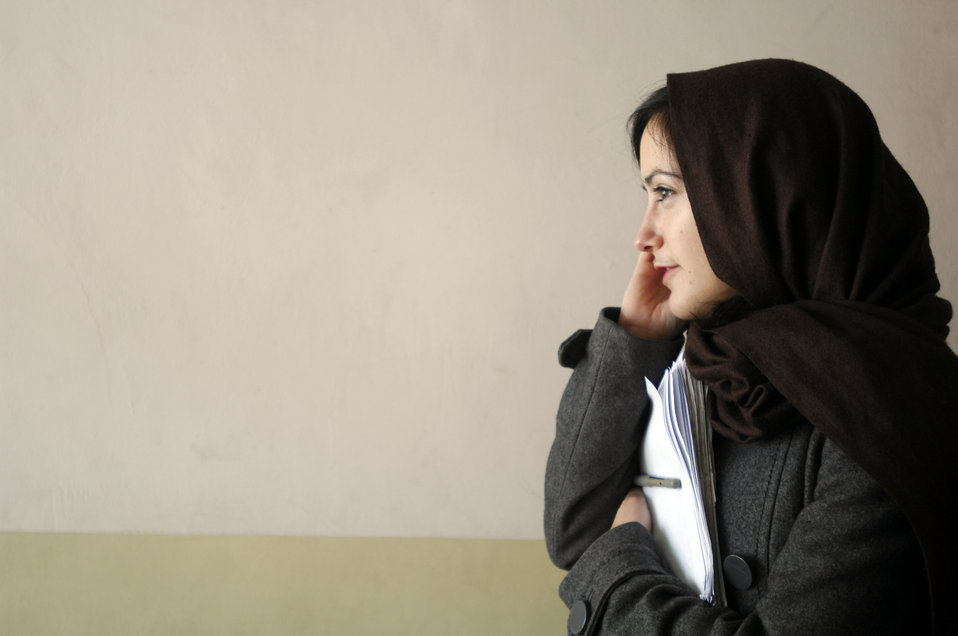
Care64